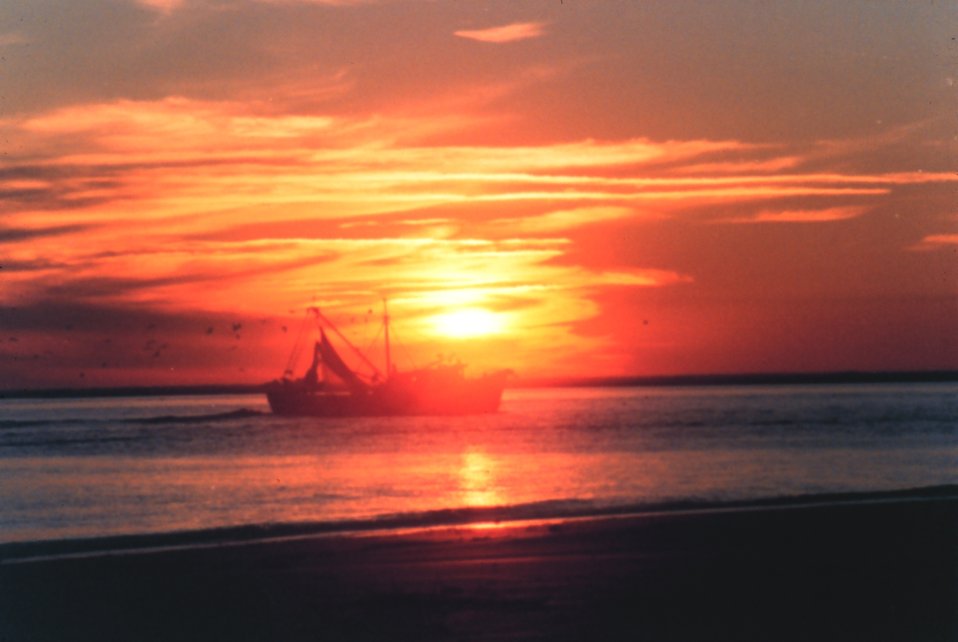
A shrimp boat cruises the waters of Doboy Sound on the south end of Sapelo Island.